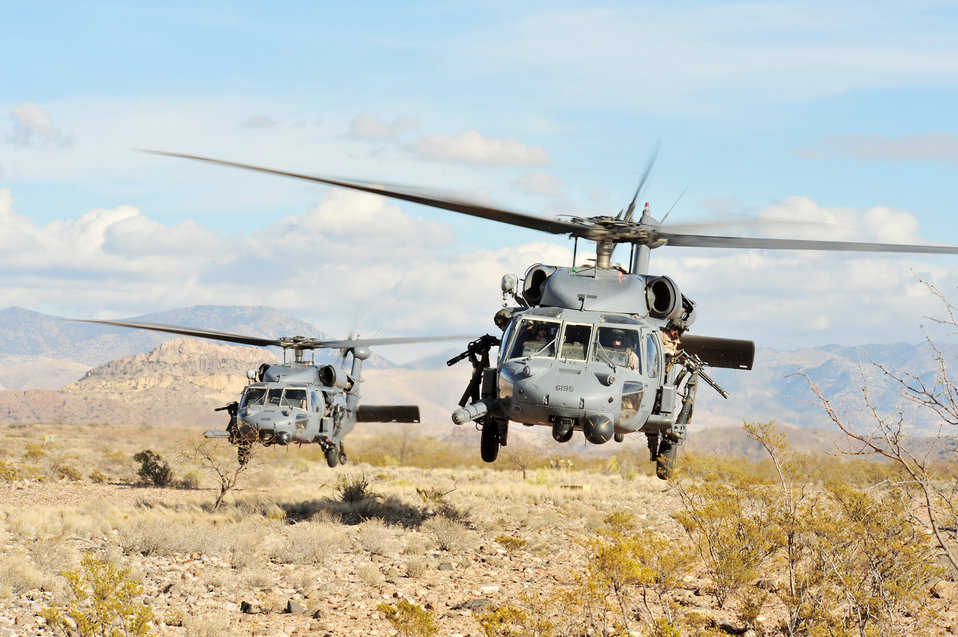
Air Combat Command officials to host multinational personnel recovery exercise

Two HH-60G Pave Hawk helicopters land during Exercise Angel Thunder 2008. More than 800 ground recovery members took part in Angel Thunder 2008, the world's largest personnel recovery and combat search and rescue exercise. Angel Thunder 2010 is scheduled for April 12 through 23 at Davis-Monthan Air Force Base, Ariz.